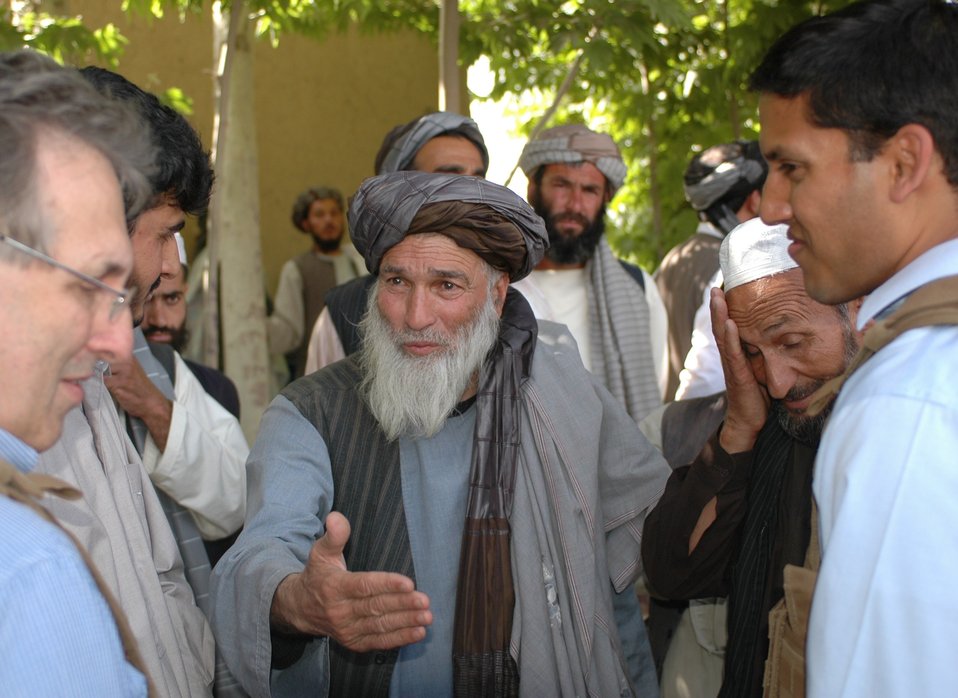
Dr Shah Visits Argandab April 10, 2010